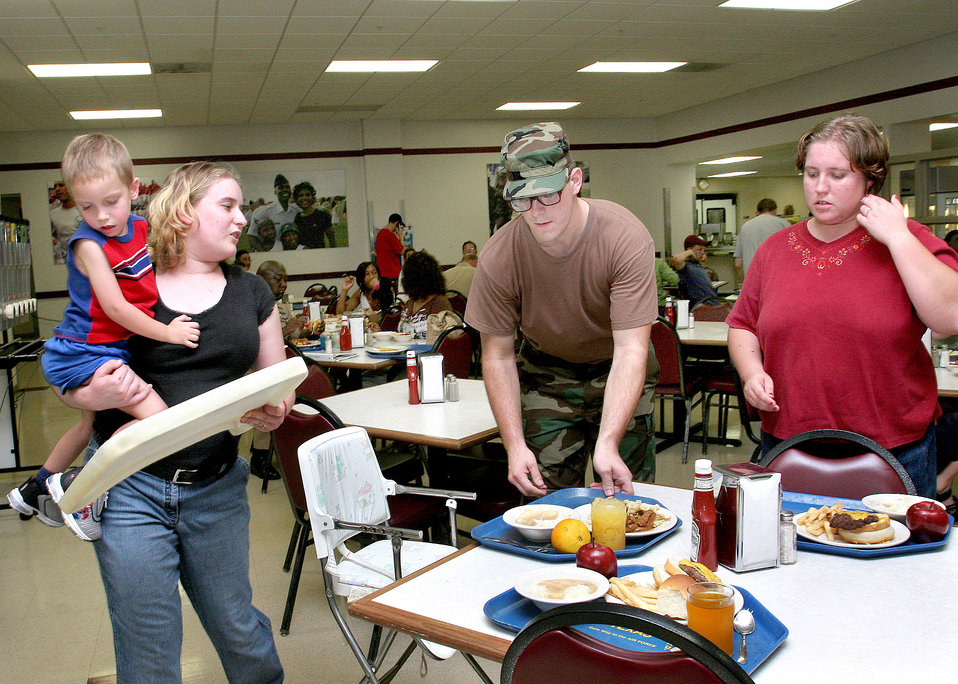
Lackland Airmen take care of Rita evacuees

LACKLAND AIR FORCE BASE, Texas -- Airman Basic Paul Kenline serves up a hot meal here for Hurricane Rita evacuees. Naval air station evacuees from the Texas Gulf Coast came here to avoid Hurricane Rita. Airman Kenline is assigned to the 322nd Training Squadron.